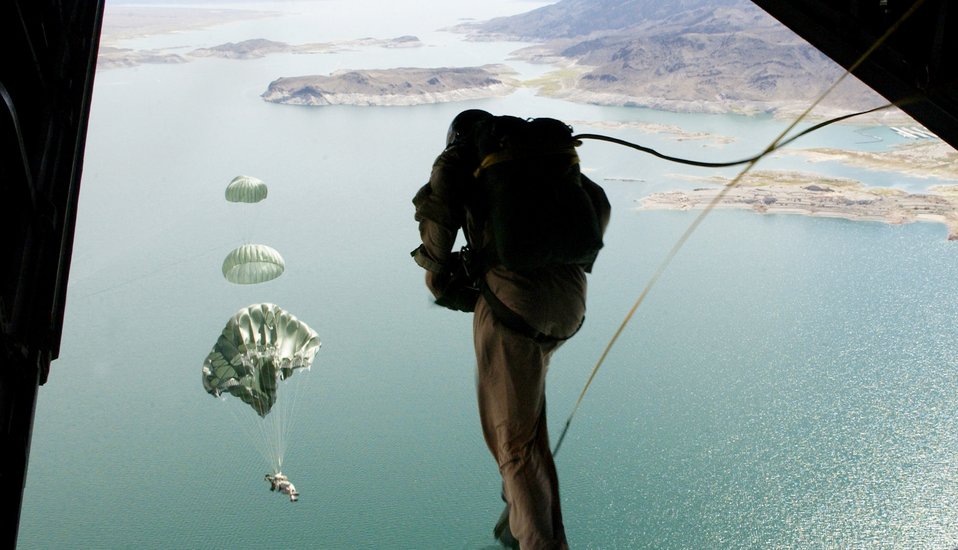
Red Flag 06-02

58th Rescue Squadron pararescuemen and combat controllers assigned to the 414th Combat Training Squadron, Nellis Air Force Base, Nev., jump out of a C-130J Hercules Sept. 1, 2006, over Lake Mead in support of Red Flag Exercise 06-2.